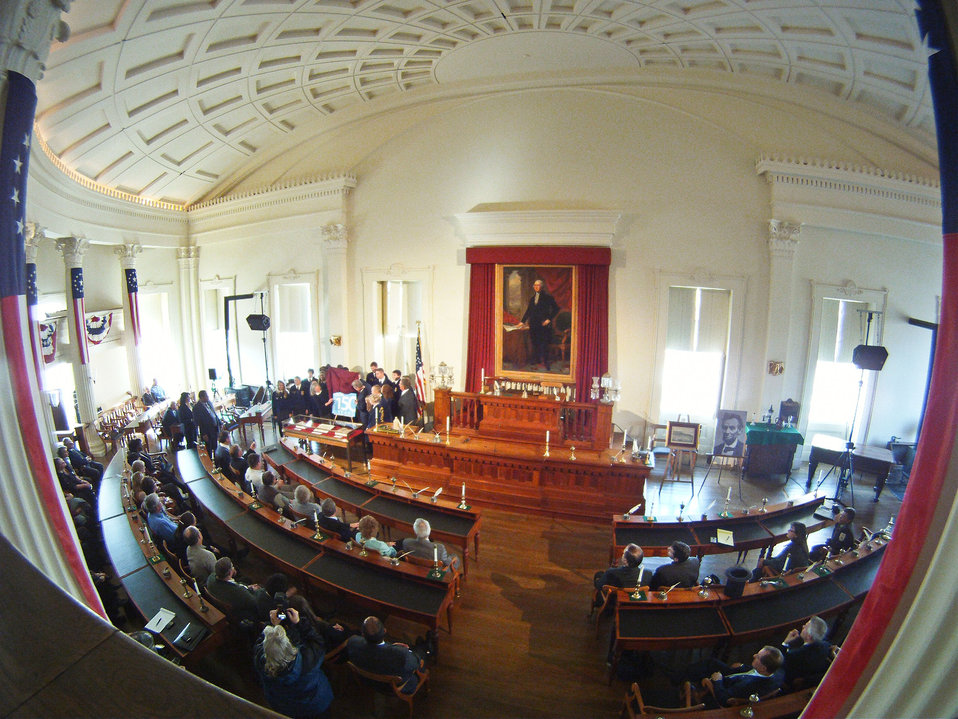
Agriculture Secretary Tom Vilsack (right) and Deputy Under Secretary for Marketing and Regulatory Programs (MRP) Ann Wright (left) with Illinois FFA unveiled the new graphic to commemorate the 150th Anniversary of U.S. Department of Agriculture in the hometown of its founder President Abraham Lincoln. The event took place at the Old State Capitol in Springfield, IL, on Wednesday, November 2, 2011.